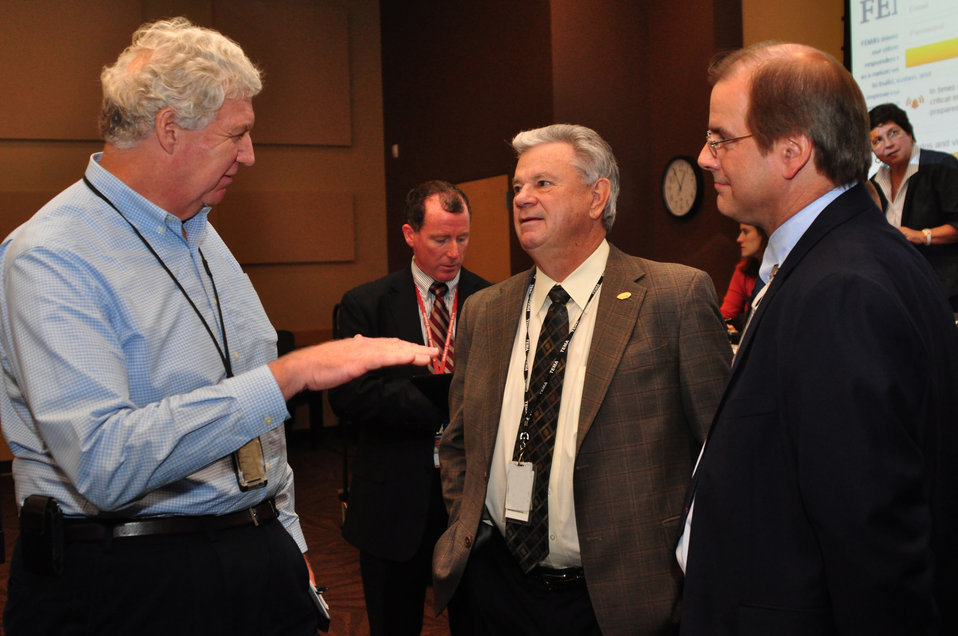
Richard Serino Deputy Administrator, FEMA,Major General(RET) James Bassham, Dir. TEMA, and Johnny Moore DOE ORNL Manager in Oak Ridge 2013

13-116-157 DOE photo Lynn Freeny 9-26-2013 Oak Ridge Tennessee